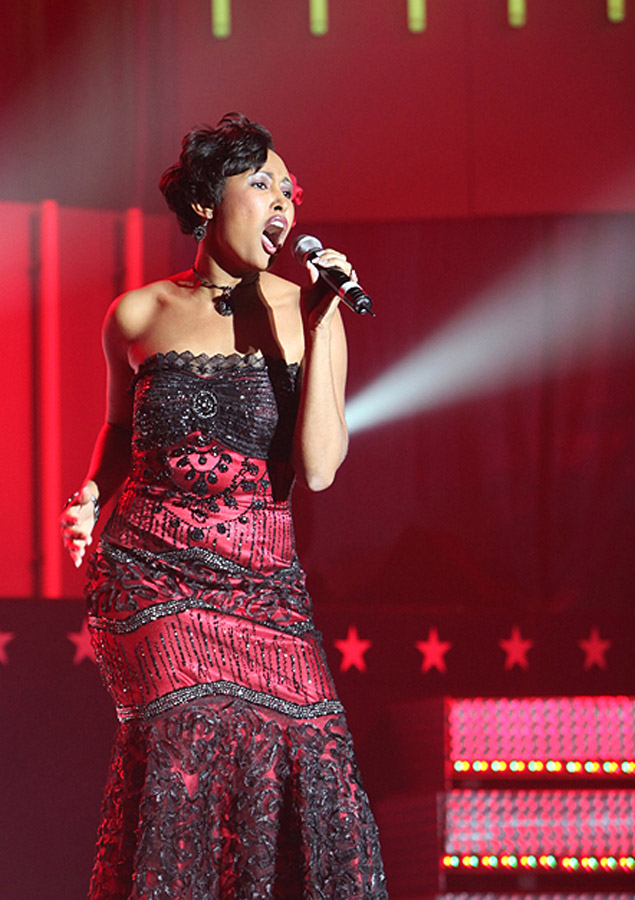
13 Airmen take Worldwide Talent Search honors

Staff Sgt. Aisha Smith won first place in the Female Vocalist category during the Air Force Worldwide Talent Search Jan. 11 through 19 held at Lackland Air Force Base, Texas. Sergeant Smith is from MacDill Air Force Base, Fla.